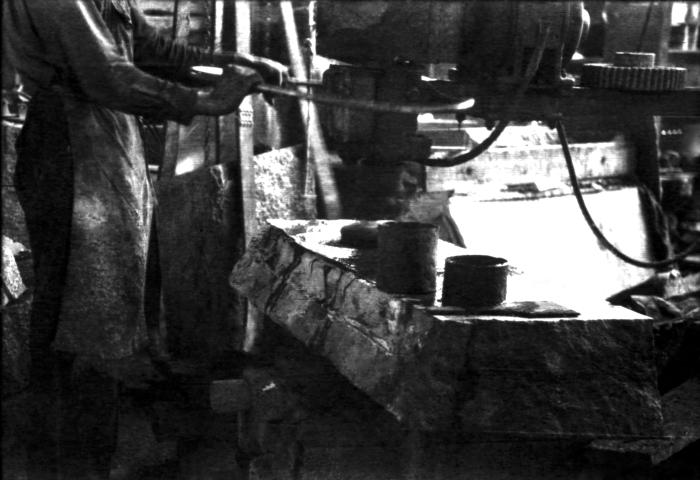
This October 1947 photograph was provided by the Center for Disease Control's (CDC), National Institute for Occupational Safety and Health (NIOSH). The image depicted a stonecutter who was shaping a granite gravestone by using a powered drill sander inside a Kansas workshop. Workers can be exposed to potential respiratory health hazards as well as other physical injuries when working in stone cutting and quarrying industries. Workers like this mason, can be exposed to potential respiratory health hazards as well as other physical injuries when working in the stone cutting and quarrying industries.